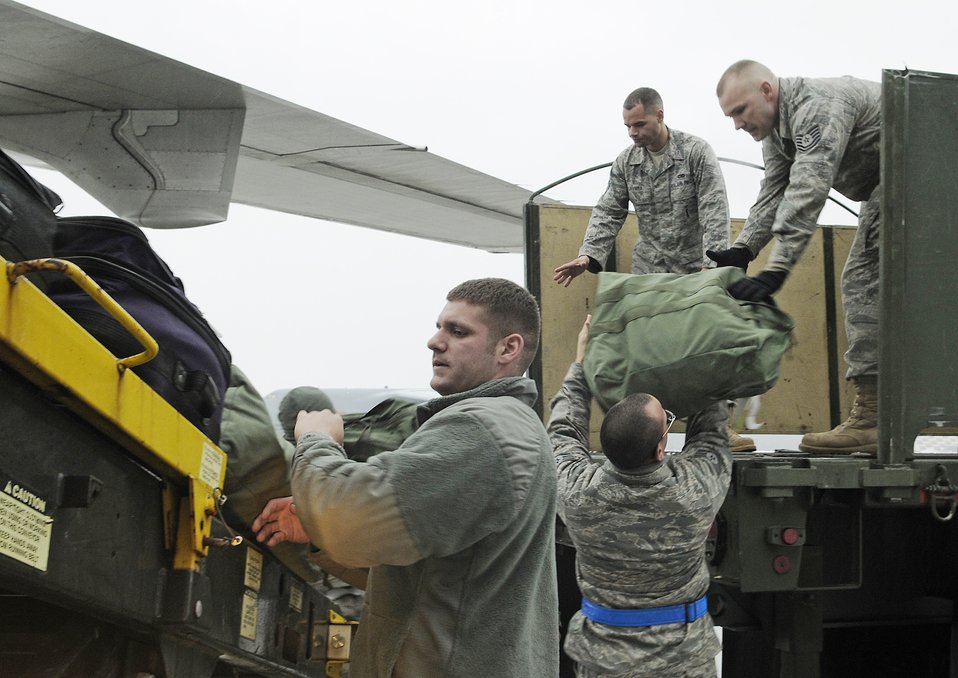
Spangdahlem team returns home

Airmen returning from a deployment unload gear on the flightline Feb. 5, 2010 at Spangdahlem Air Base, Germany. More than 300 members returned to the base after a deployment to Joint Base Balad, Iraq, in support of Operation Iraqi Freedom.